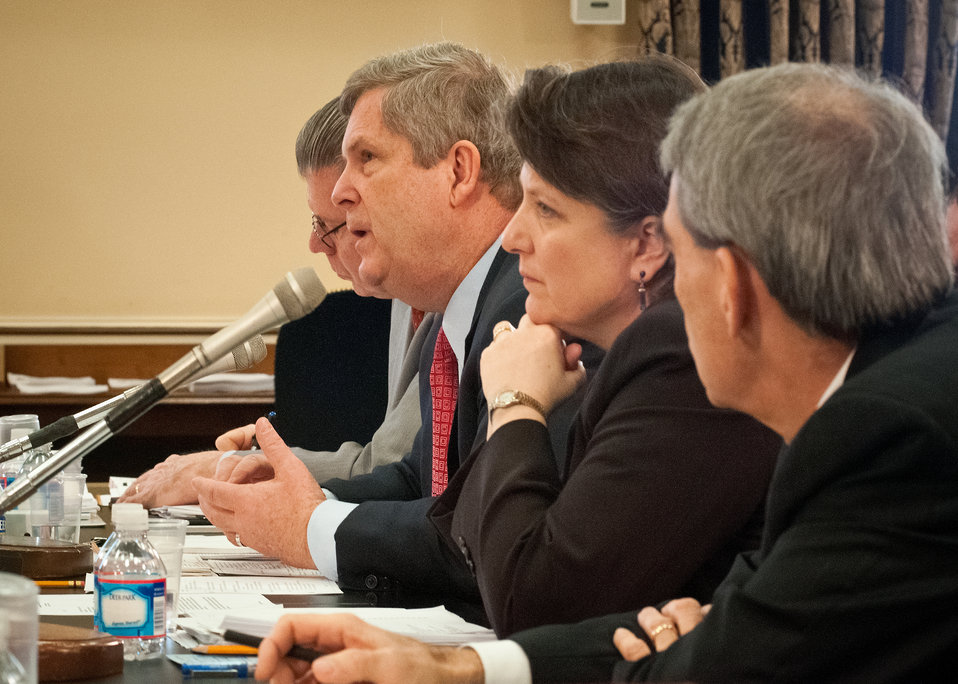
From left: Dr. Joseph Glauber, Chief Economist, Agriculture Secretary Tom Vilsack, Dr. Kathleen Merrigan, Deputy Secretary and Michael Young Budget Officer appear before the House Agriculture Appropriations Committee to discuss the United States Department of Agriculture budget in the Rayburn House Office Building on Friday, February 17, 2012 in Washington, D.C.